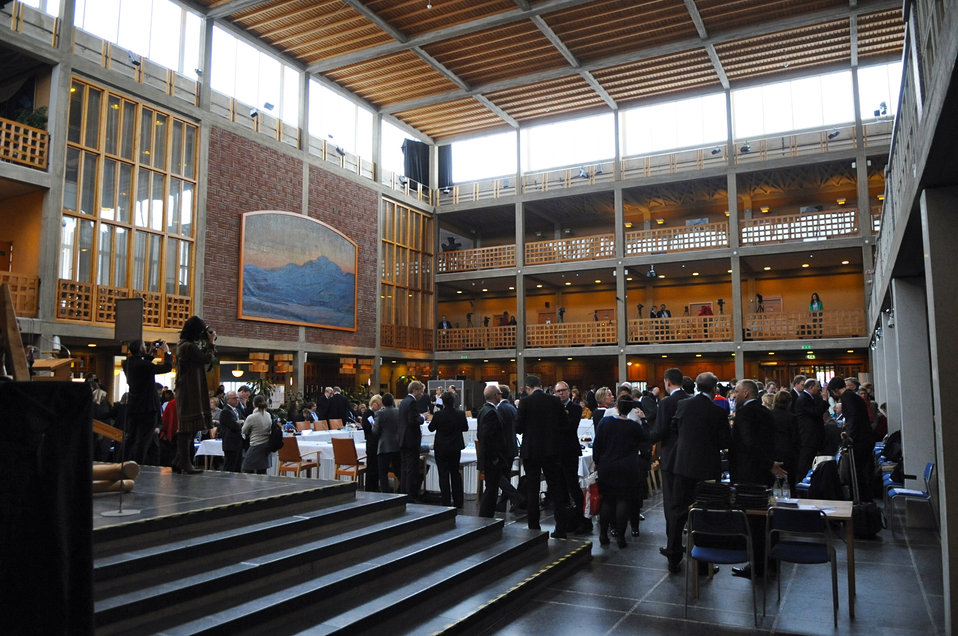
Secretary Kerry Attends the Arctic Council Ministerial Session

U.S. Secretary of State John Kerry attends the Kiruna Ministerial Meeting of the eighth annual Arctic Council meeting at the City Hall in Kiruna, Sweden, on May 15, 2013.